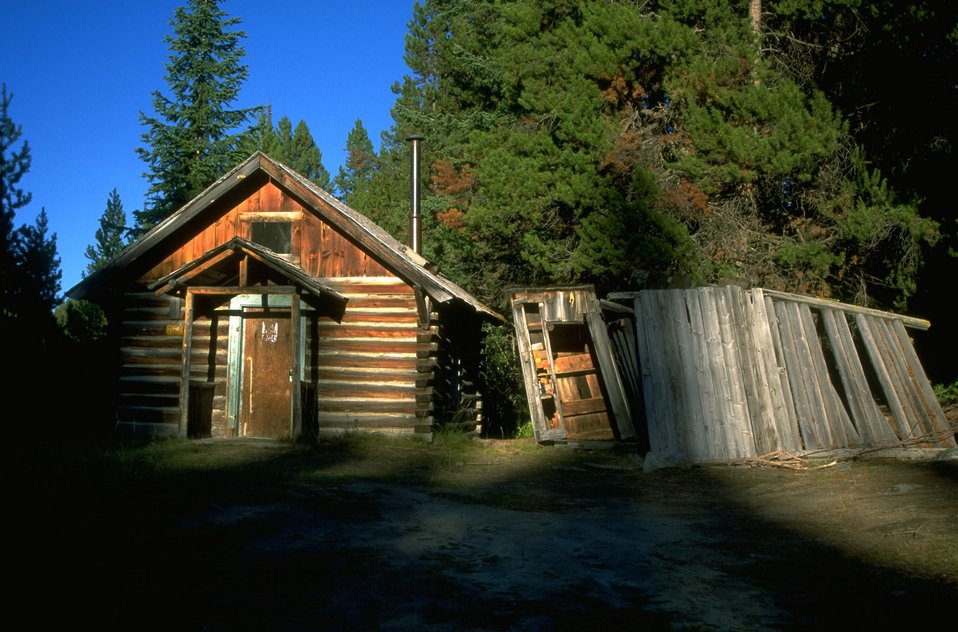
Garnet Back Country Byway--old fire warden's cabin